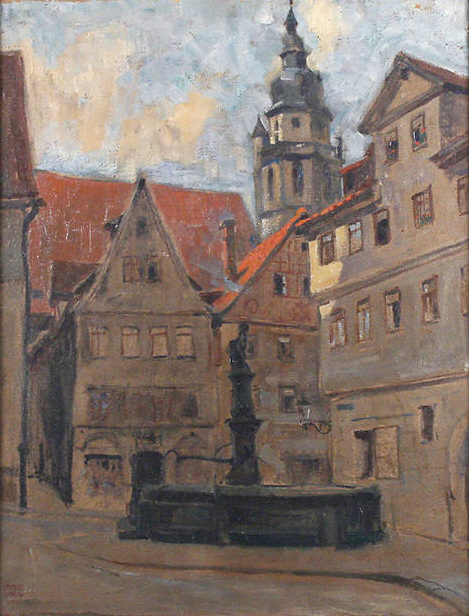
”Aus Coburg”, idyllischer Altstadtwinkel mit Brunnen u. Blick auf die Morizkirche, Öl auf Leinmwand